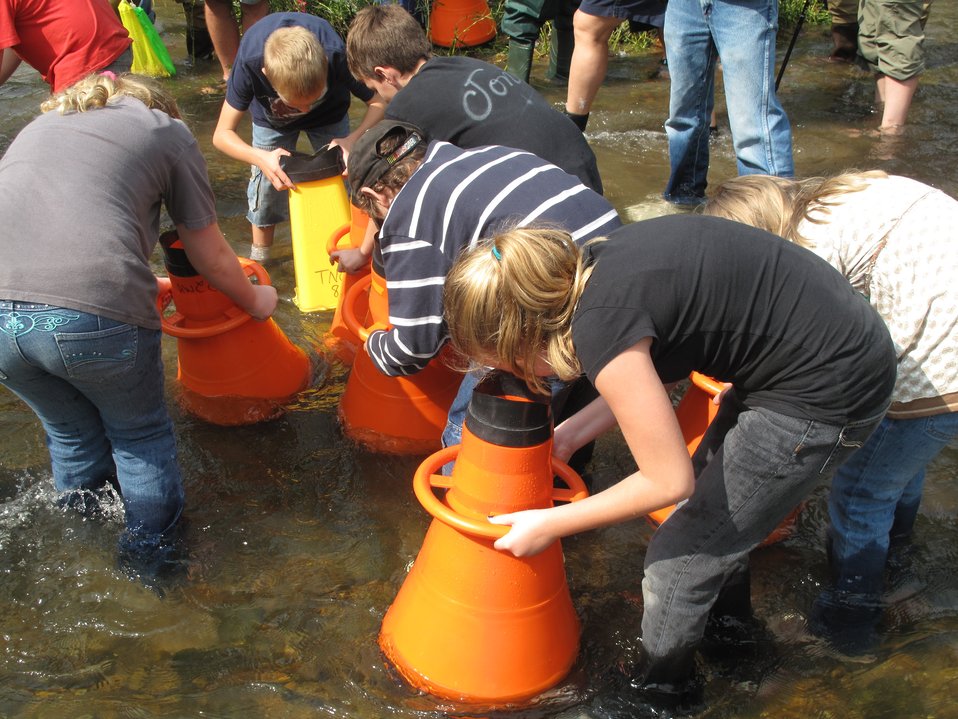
Mussel release outreach event

The mussel release event was a cooperative effort between the Virginia Department of Game and Inland Fisheries (DGIF), U.S. Fish and Wildlife Service, the Nature Conservancy, public and private partners, and other non-profit organizations. It also served as an outreach oppurtunity where school children were able to come out and help with the event and learn about the importance of mussels.